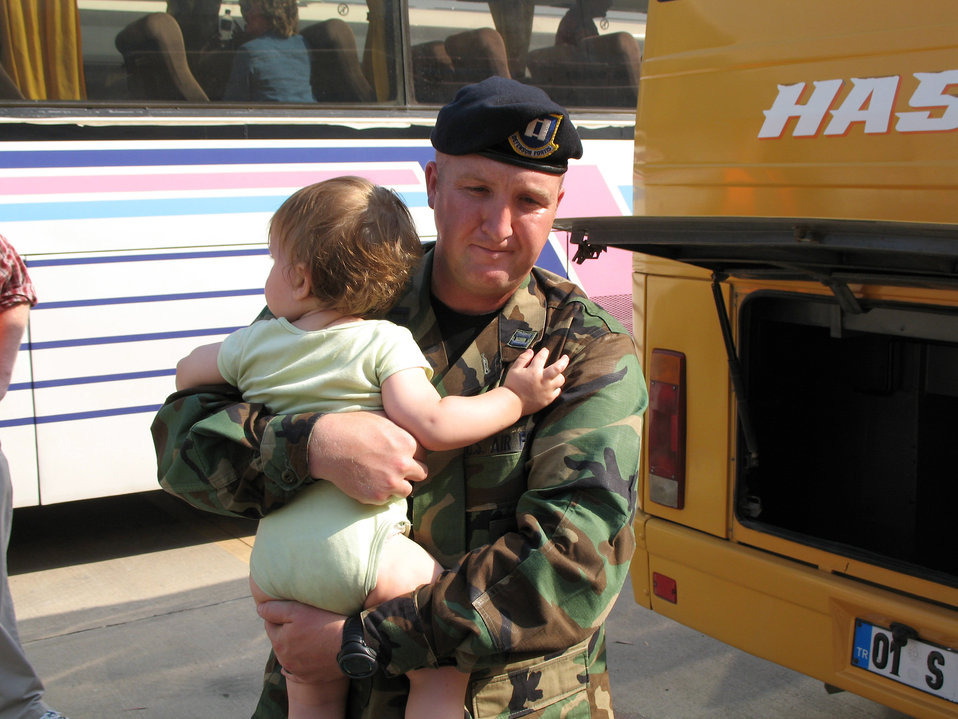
Americans arrive in Turkey from Lebanon

Capt. James Alves assists a small American child who just arrived at Incirlik Air Base, Turkey, on Monday July 24th, from Lebanon. More than 1,600 American citizens arrived in the port city of Mersin, Turkey, on the USS Trenton before being transported by bus to Incirlik.